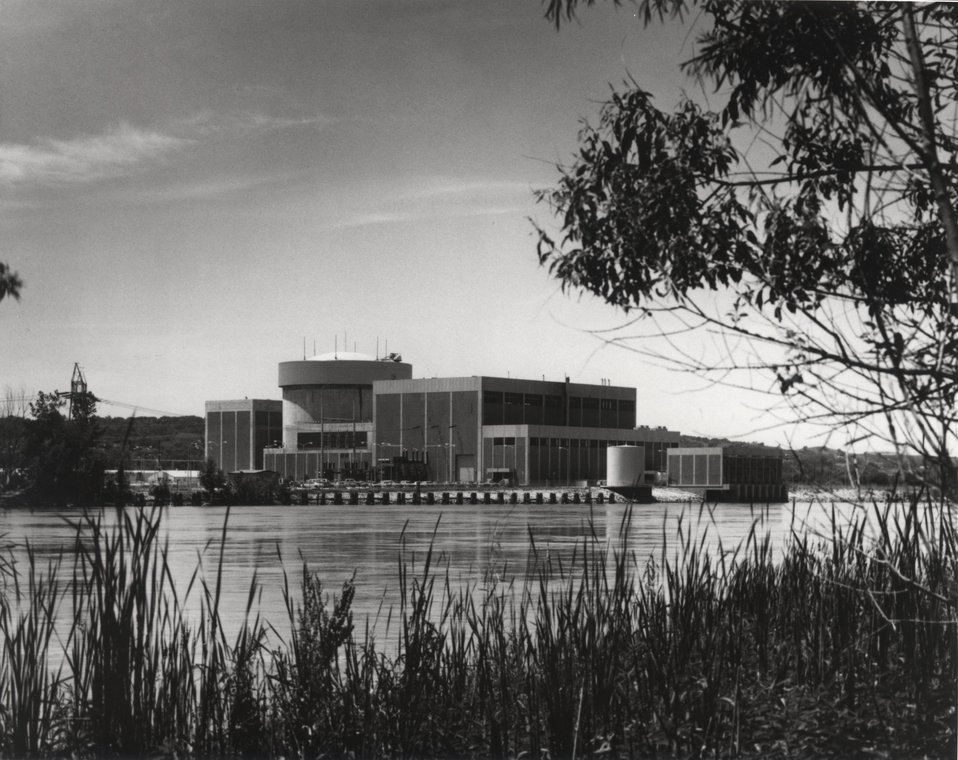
The Omaha Public Power District Fort Calhoun Nuclear Power Station located at Fort Calhoun, Nebraska. Circa 1974.